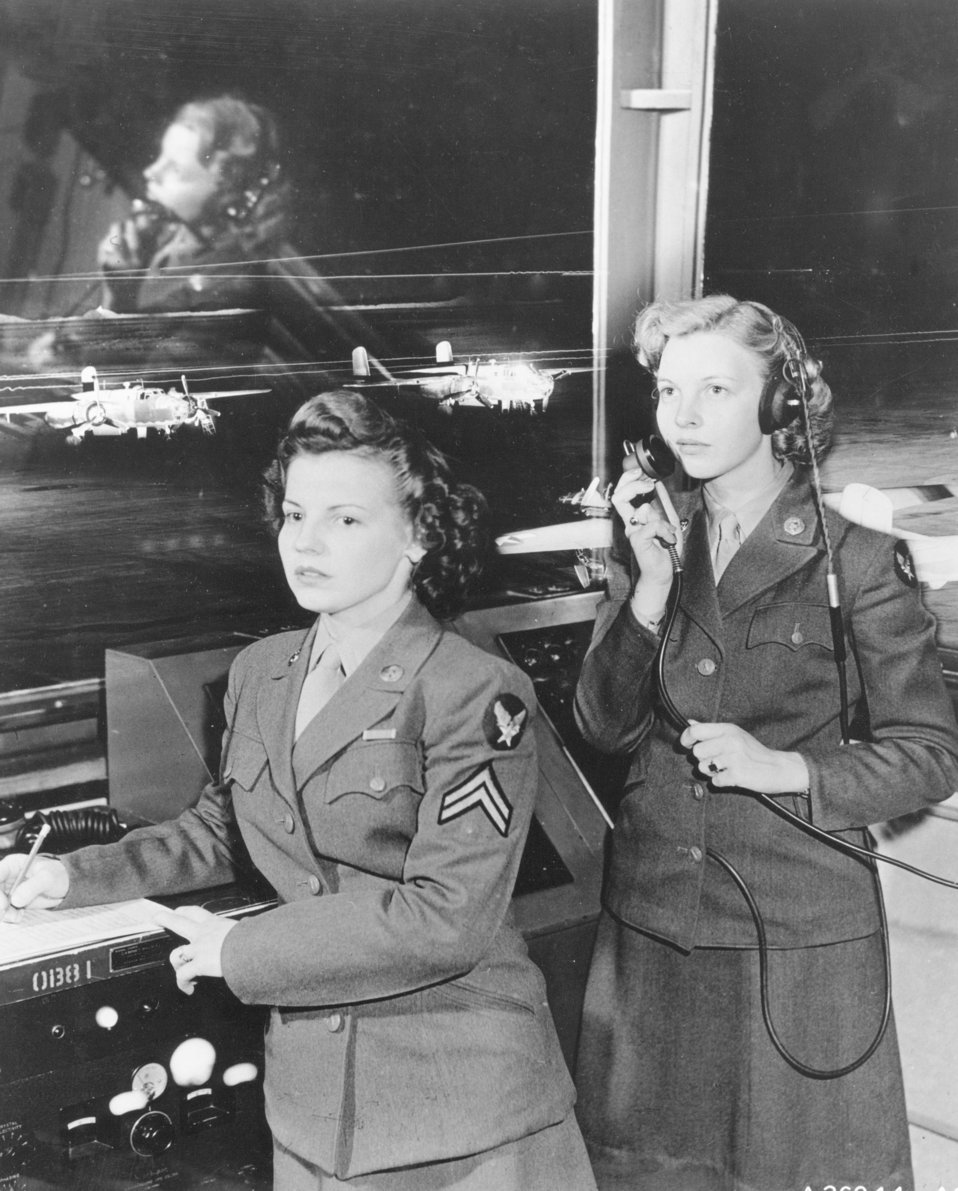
Women's Army Corps

1940's -- Women's Army Corps, Randolph Field, Texas, 1944.